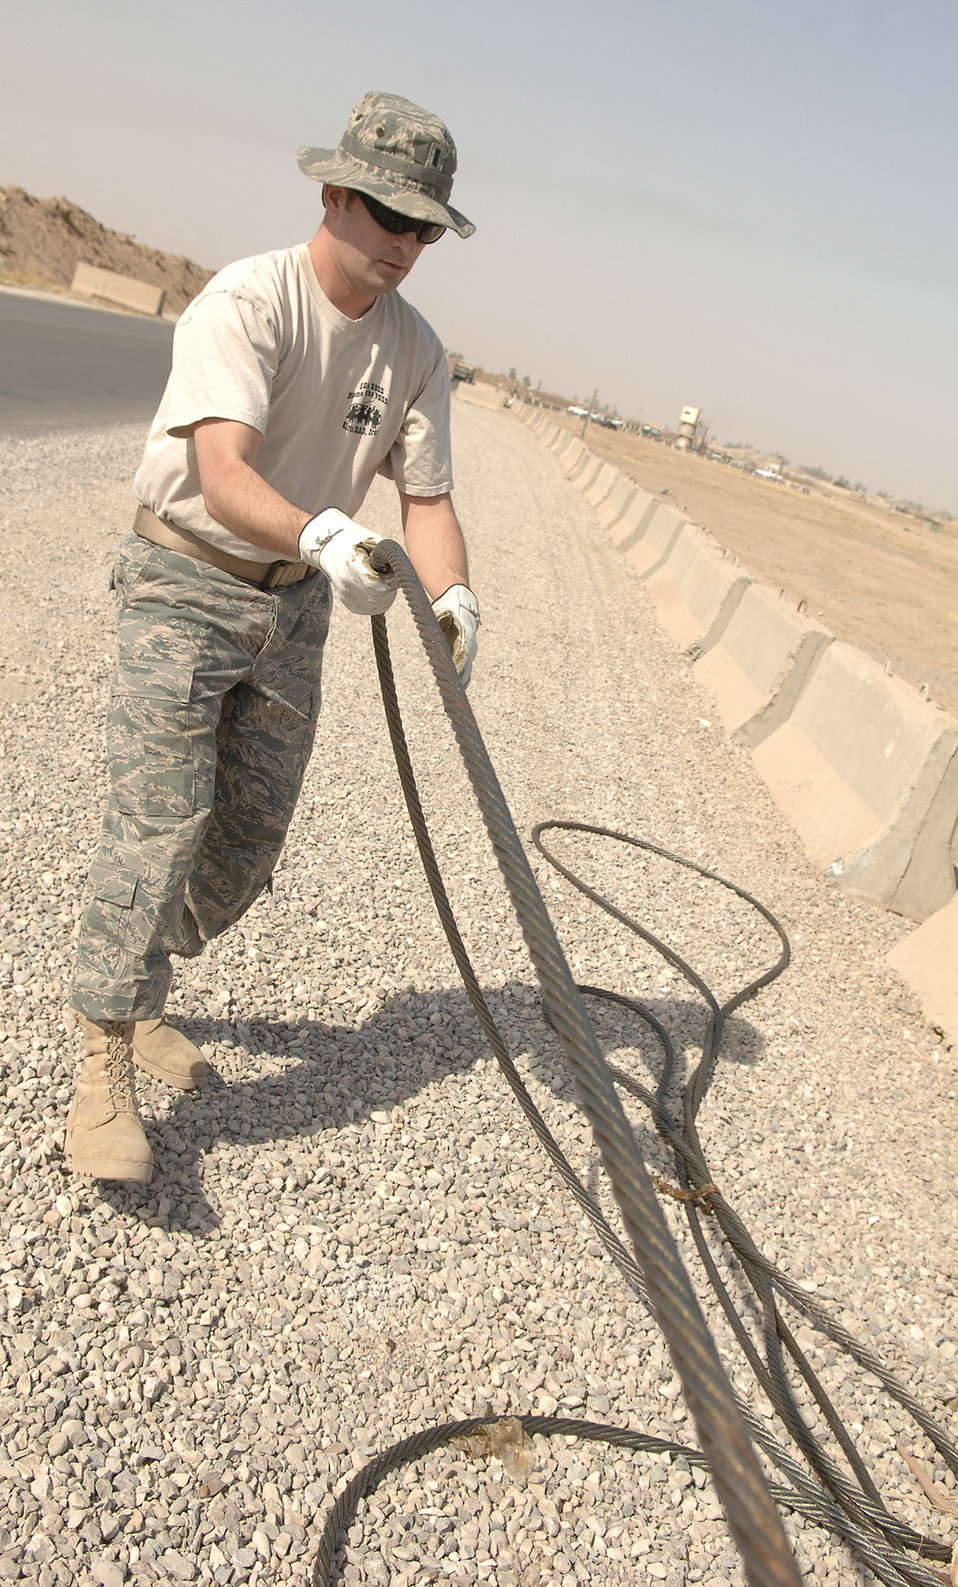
Kirkuk self-help project protects airfield assets, saves money

1st Lt. Sam Walker untangles aircraft cables June 5 at Kirkuk Air Base, Iraq. Airmen here teamed up to place barriers, cables and signs around the airfield recently, mitigating vulnerabilities and lessening safety risks. This self-help airfield-security project saved an estimated $500,000 by using existing assets and volunteers. Lieutenant Walker is the 506th Expeditionary Operations Support Squadron airfield operations flight director. He is a Miami native deployed from Key Field, Miss.